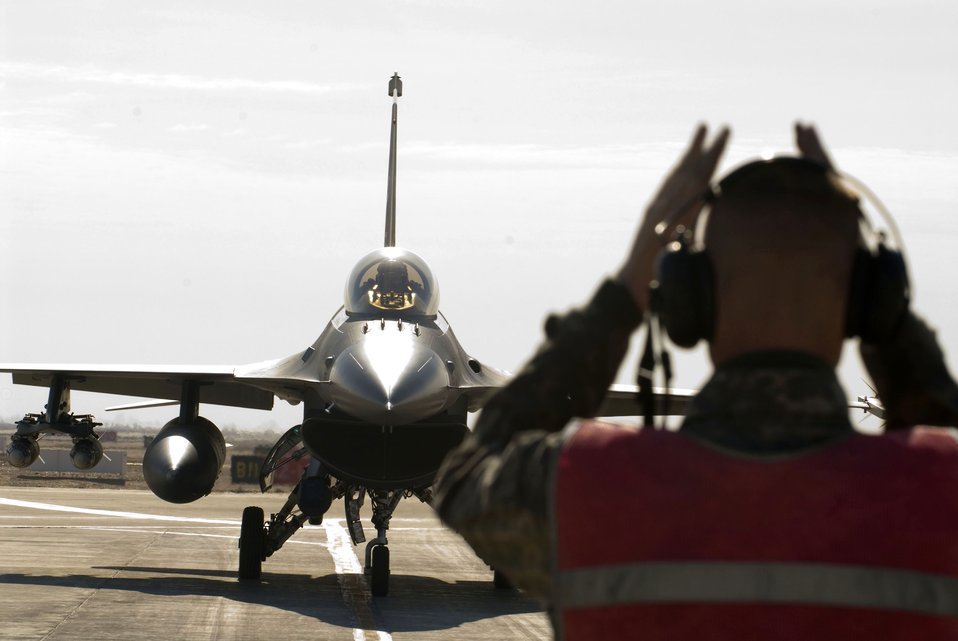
Airmen are 'bombarded'

Staff Sgt. Jeremy Lewis marshals an F-16 Fighting Falcon in the arm/de-arm pit Jan. 19 at Balad Air Base, Iraq. Before and after all F-16 missions, the aircrafts munitions are armed and de-armed inside the pit to maintain safety and security. Sergeant Lewis is a 332nd Expeditionary Aircraft Maintenance Unit crew chief deployed from Spangdahlem Air Base, Germany.